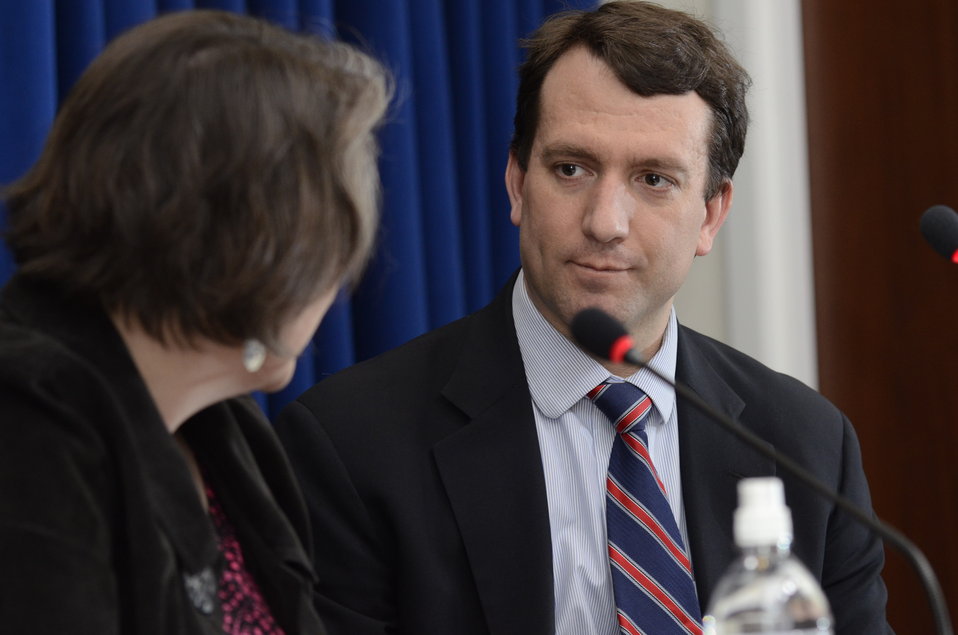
Agriculture Deputy Secretary Kathleen Merrigan and Director, White House Office of Public Engagement Jon Carson, during a Know Your Farmer Compass event that used twitter social media to continue the National Conversation on Local and Regional Food projects and how they offer economic opportunities to local farmers, ranchers and food entrepreneurs. The virtual conversation took place from the White House, in Washington, D.C., on Monday, March 5, 2012.